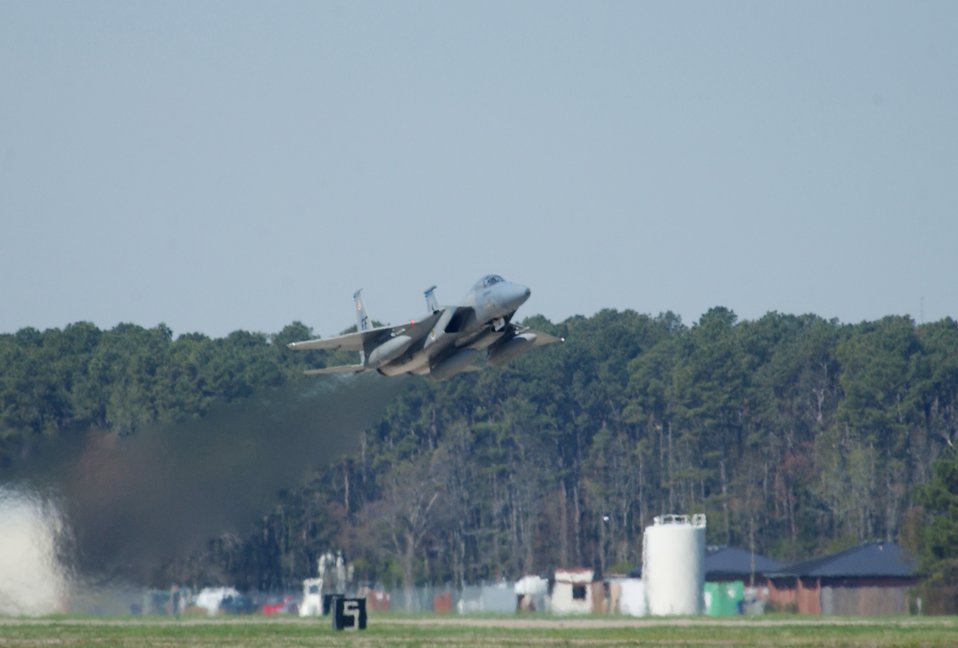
Eagle trail

LANGLEY AIR FORCE BASE, Va. -- An F-15 Eagle takes off on a training mission here April 11. The flight was part of the base's operation readiness exercise.